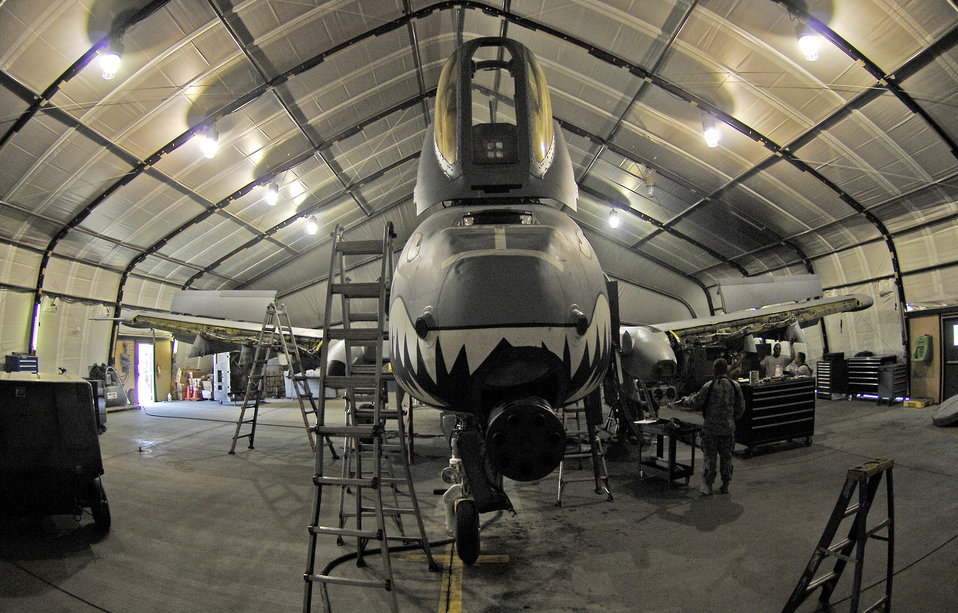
Innovative maintainers save time, lives of front line troops

An A-10 Thunderbolt II sits in the 455th Expeditionary Maintenance Squadron hangar for a phase inspection July 2 at Bagram Airfield, Afghanistan. Maintainers here implemented a new phase inspection process that cuts maintenance time on the aircraft in half and ensures the aircraft can provide close air support for ground troops in Afghanistan.